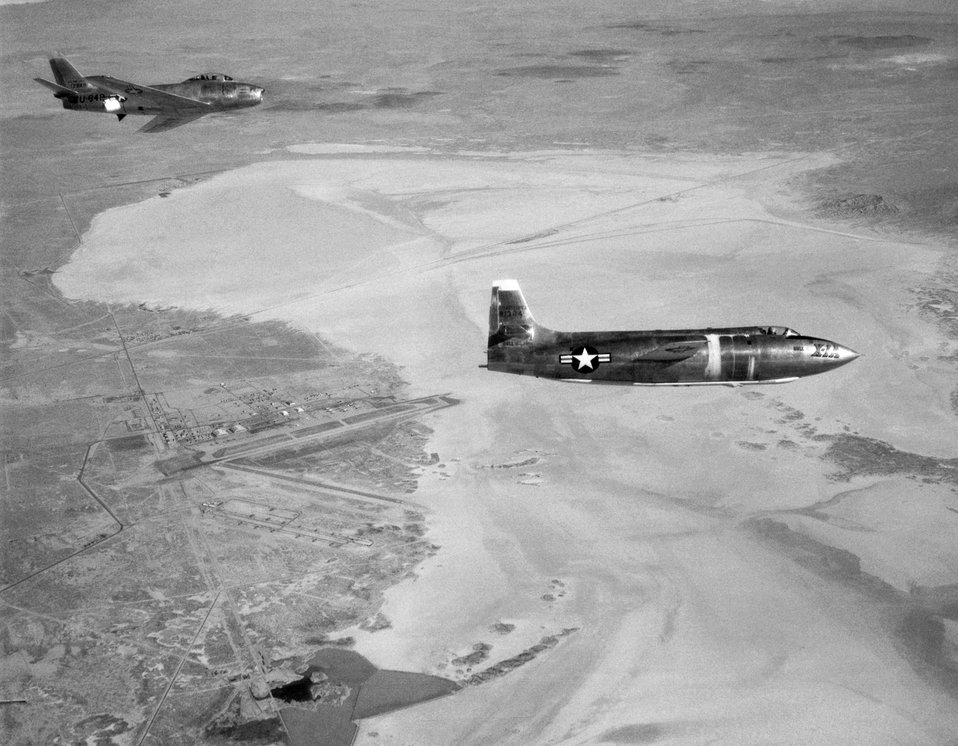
X-1A in flight over Rogers Dry Lake, Calif., in 1953.